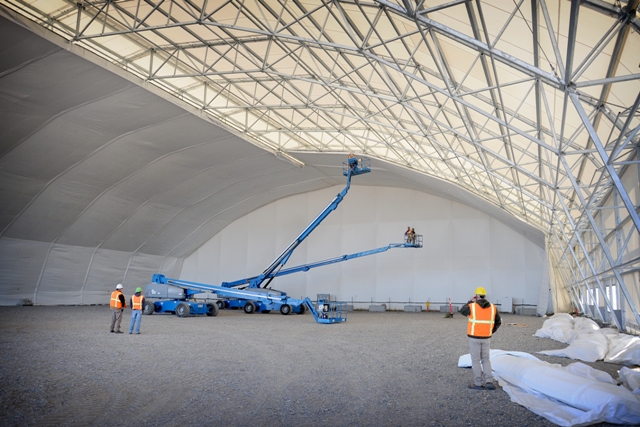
Idaho Site Completes Buried Waste Project a Year Ahead of Schedule

Workers install fabric inside the Accelerated Retrieval Project IV retrieval enclosure. Retrieval enclosures are designed to withstand sunlight, snow and wind and maintain a negative pressure inside.

Using $26 million from the Recovery Act, workers at the Idaho site recently finished a buried waste retrieval effort more than a year ahead of schedule.